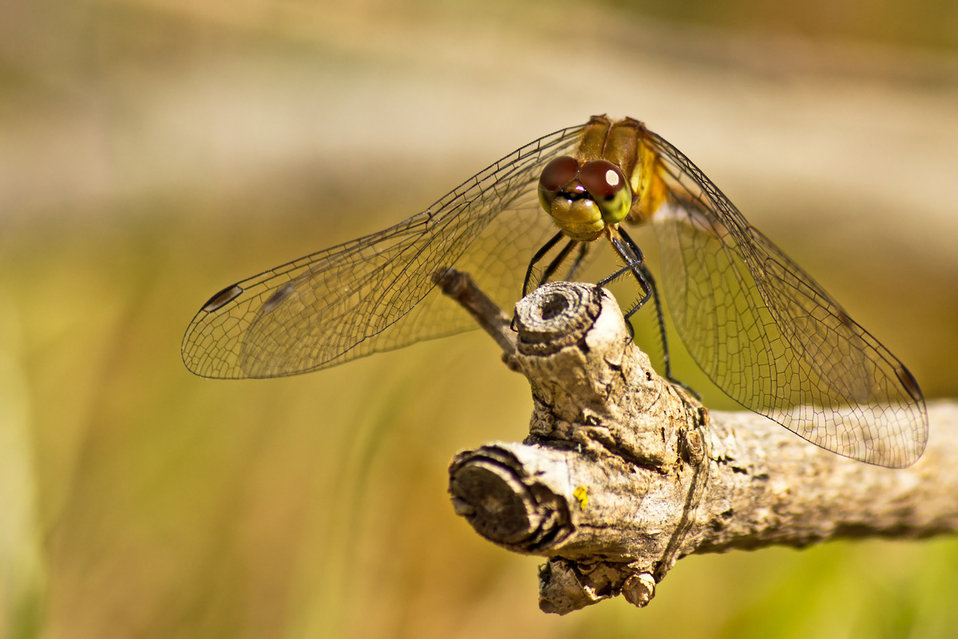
Meadowlark

Dragonfly photographed at Rachel Carson National Wildlife Refuge.